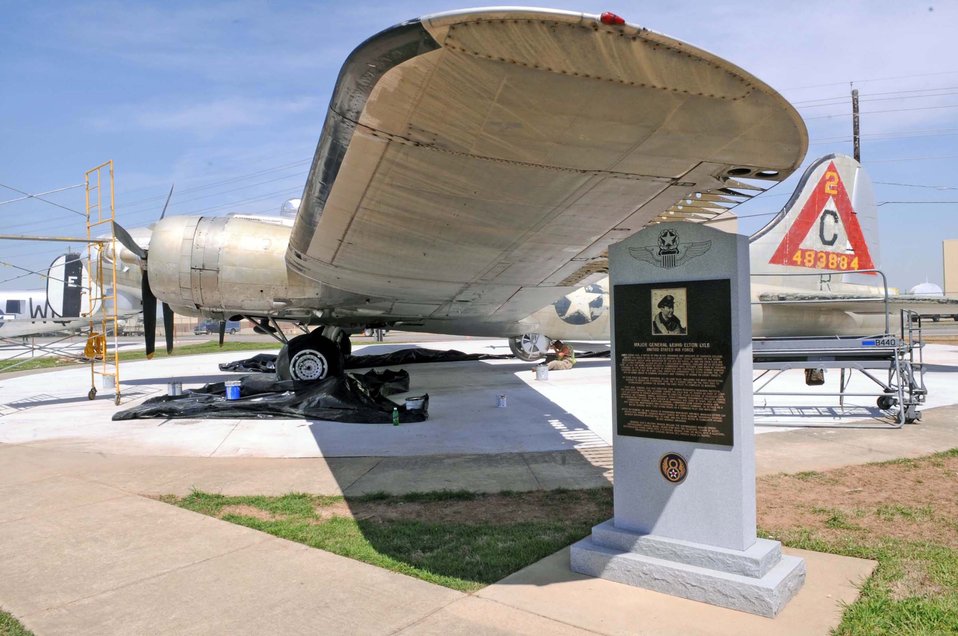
Barksdale Airmen restore B-17G for 8th Air Force museum

This B-17G static display honors Maj. Gen. Lewis E. Lyle at the 8th Air Force Museum April 5, 2010, at Barksdale Air Force Base, La. Barksdale AFB Airmen, volunteers and contractors are in the process of restoring the B-17 and painting it to resemble one that was flown by General Lyle on a bombing mission during World War II.